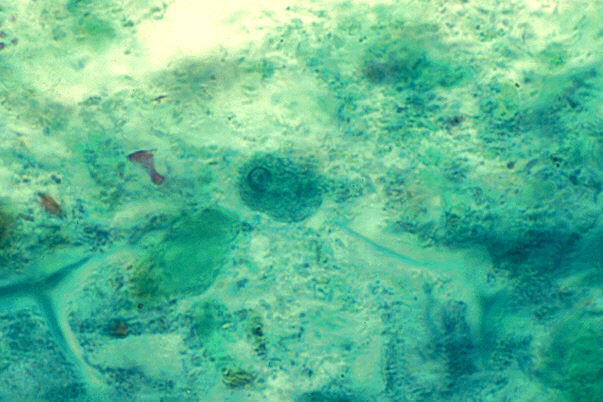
Entamoeba histolytica trophozoite. Wheatley's trichrome stain.